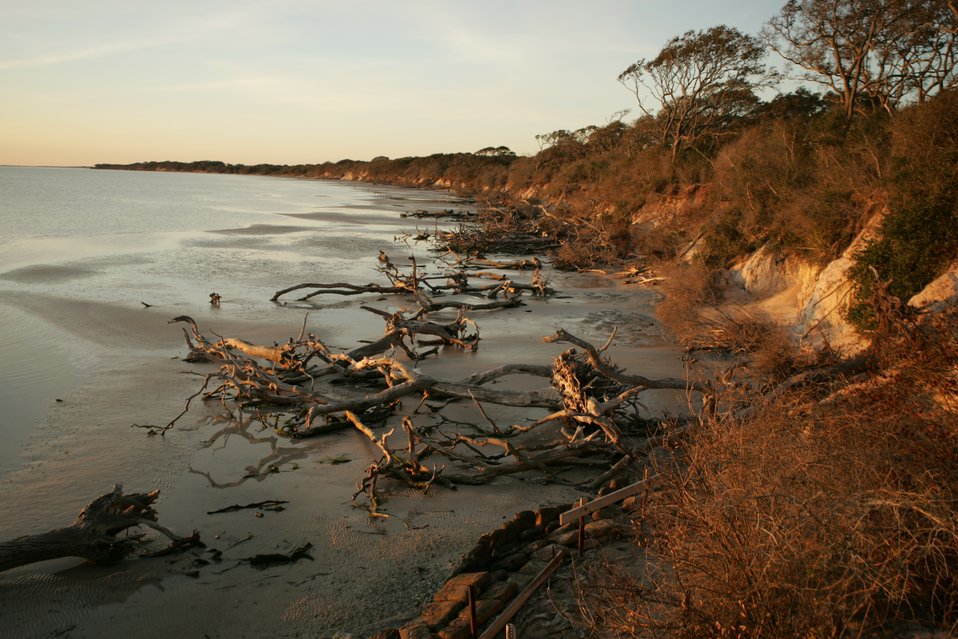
Aransas NWR shoreline

Water laps against driftwood along a shoreline at Aransas National Wildlife Refuge in Texas.